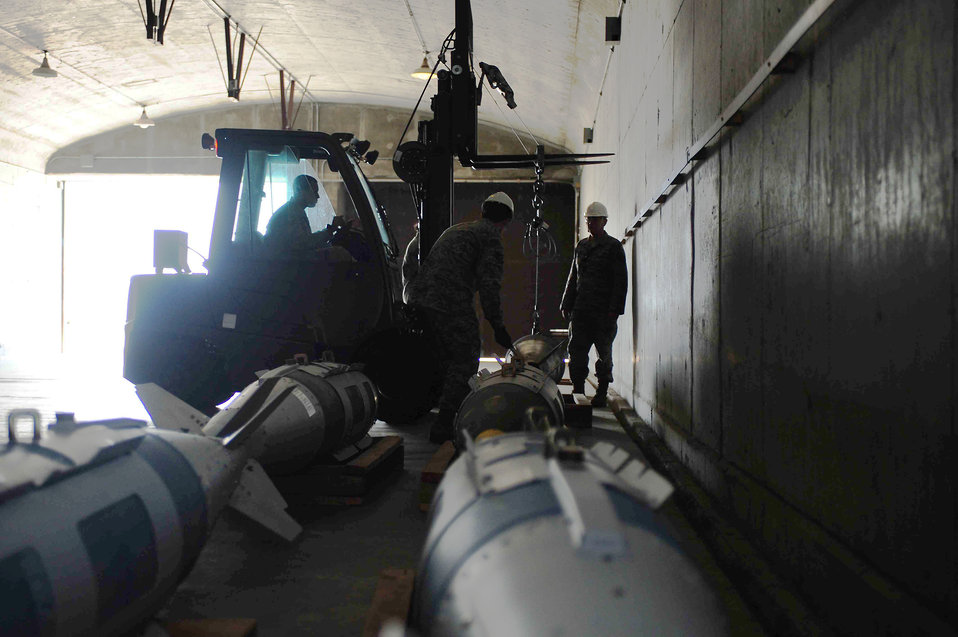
Warehousing the Mark 84 bomb

Munitions crewmembers inspect the storing of Mark 84 bombs inside a hardened structure, April 21, 2010, at Ellsworth Air Force Base, S.D.